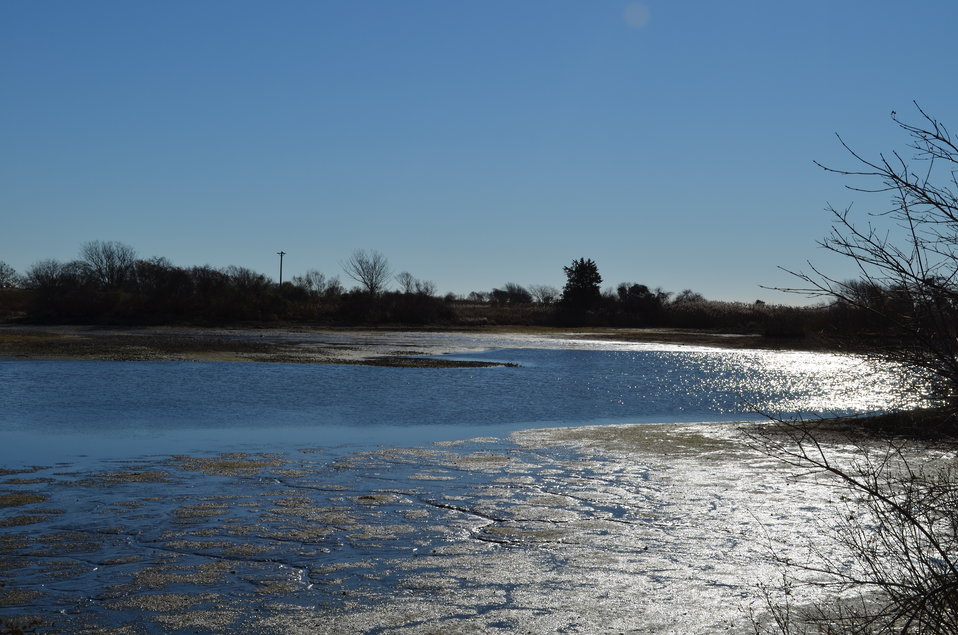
Shimmering mud at Trustom Pond National Wildlife Refuge (RI)

Sunlight reflects off the mud encasing much of the outer rim of Trustom Pond on Rhode's Island's coast.

Credit; Ashley Spratt/USFWS.